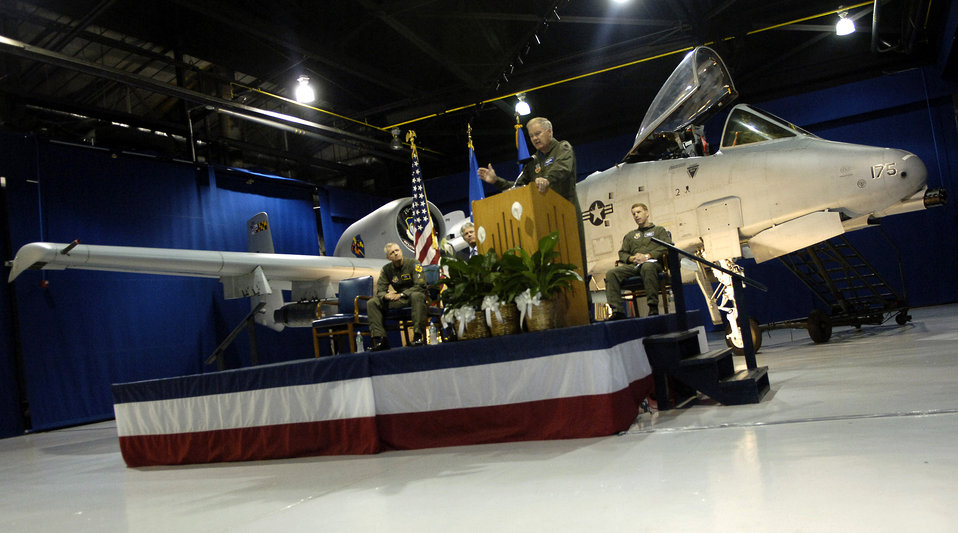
A-10 Thunderbolt II gets technological 'thumbs up'

Gen. Ronald E. Keys announced,